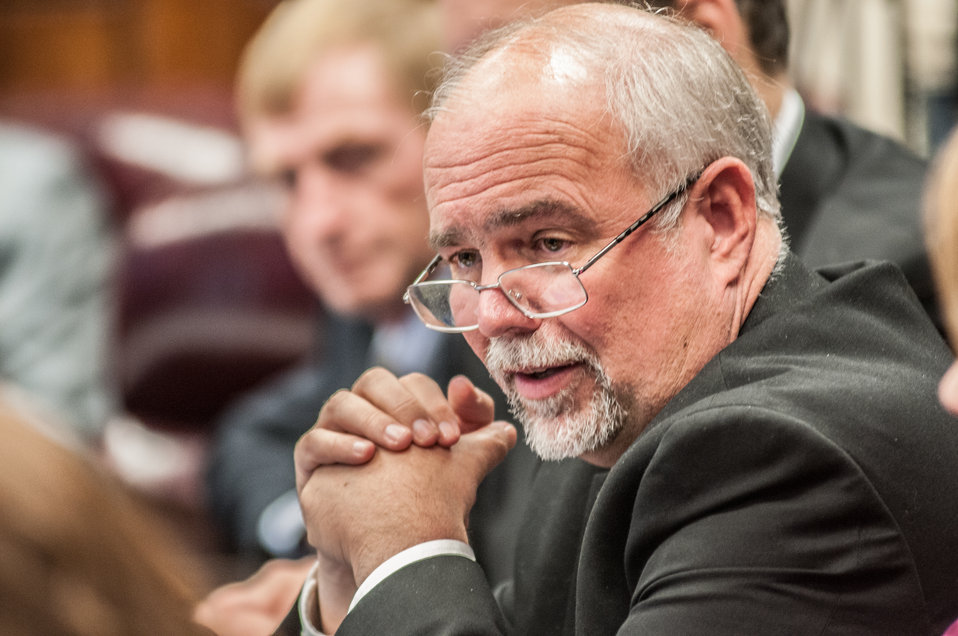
A farm broadcaster asks a question of Agriculture Secretary Tom Vilack at a farm broadcasters meeting at the U.S. Department of Agriculture (USDA) on Tuesday, May 14, 2013, in Washington, D.C.